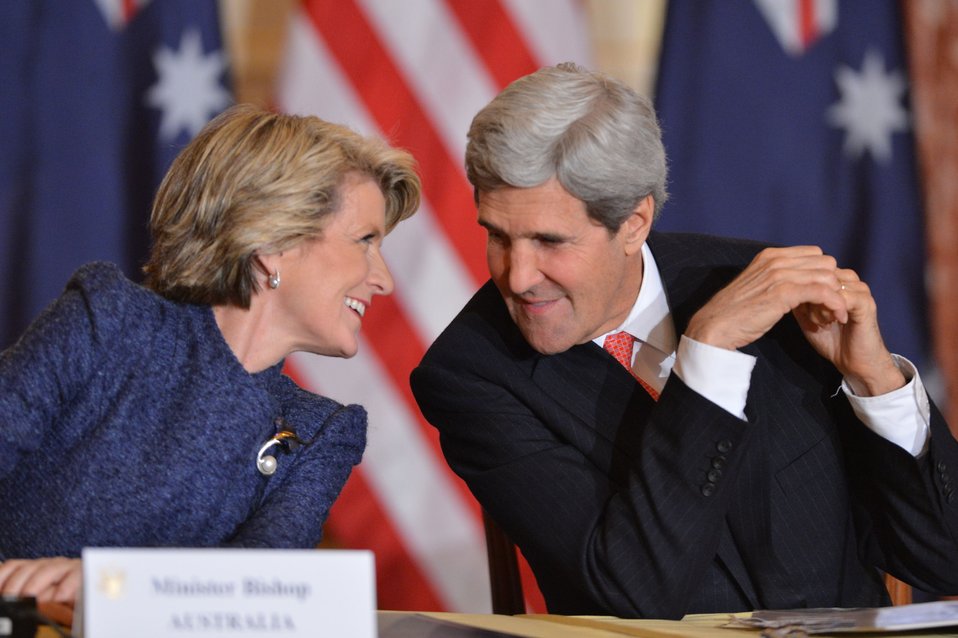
Secretary Kerry and Australian Foreign Minister Bishop Share a Laugh

U.S. Secretary of State John Kerry and Australian Foreign Minister Julie Bishop share a laugh during a joint press conference with U.S. Secretary of Defense Chuck Hagel and Australian Minister of Defence David Johnston during the Australia-United States Ministerial Consultations at the U.S. Department of State in Washington, D.C., on November 20, 2013.